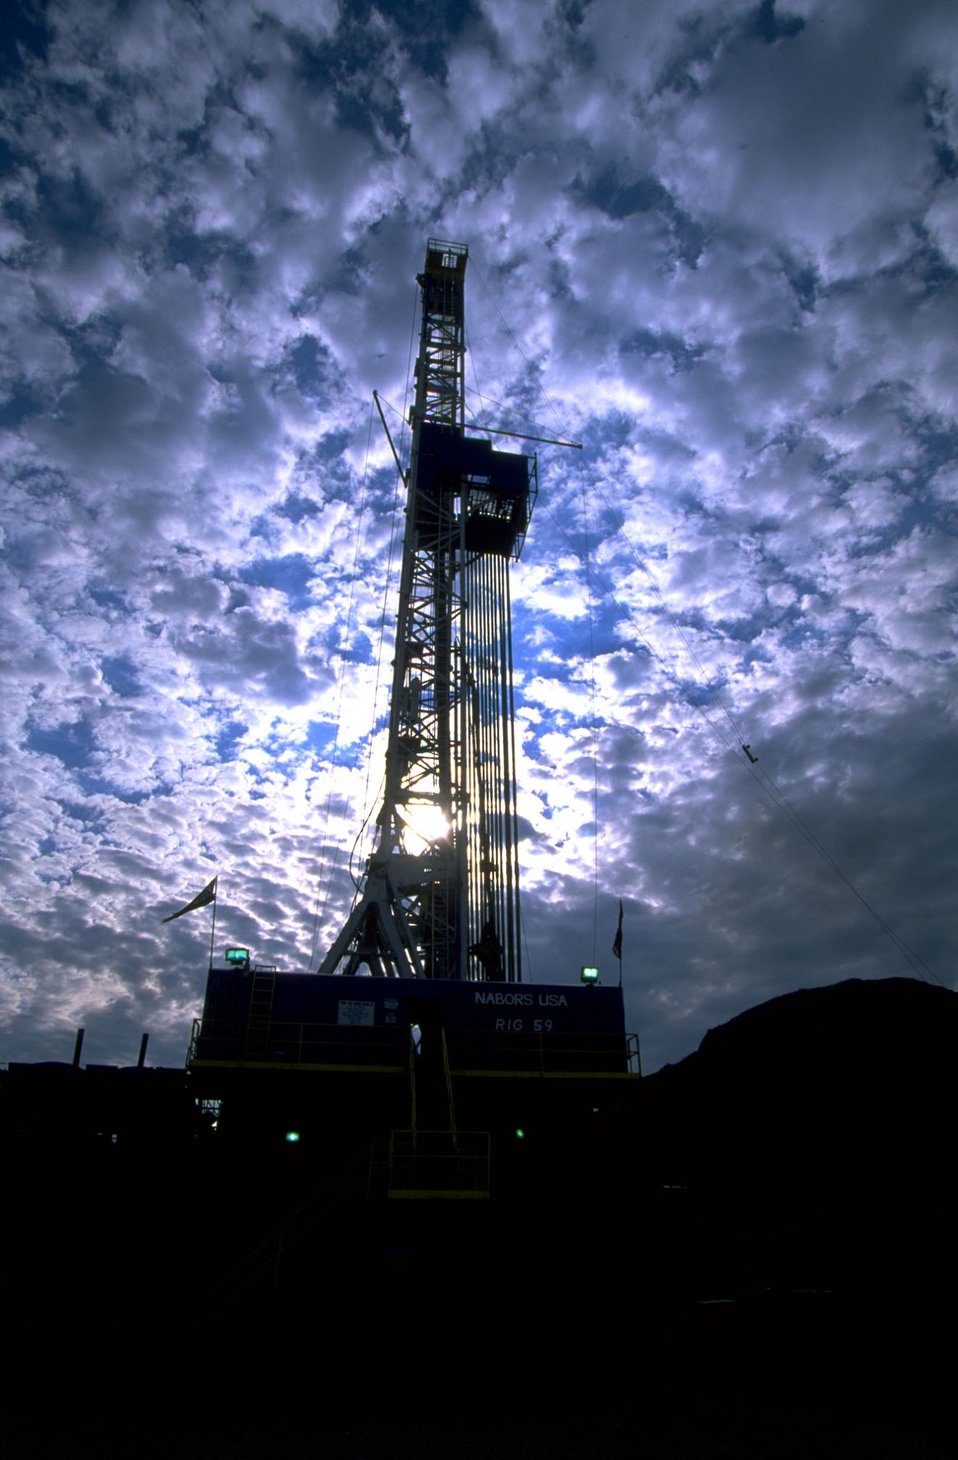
Sunrise with drilling rig silhouetted